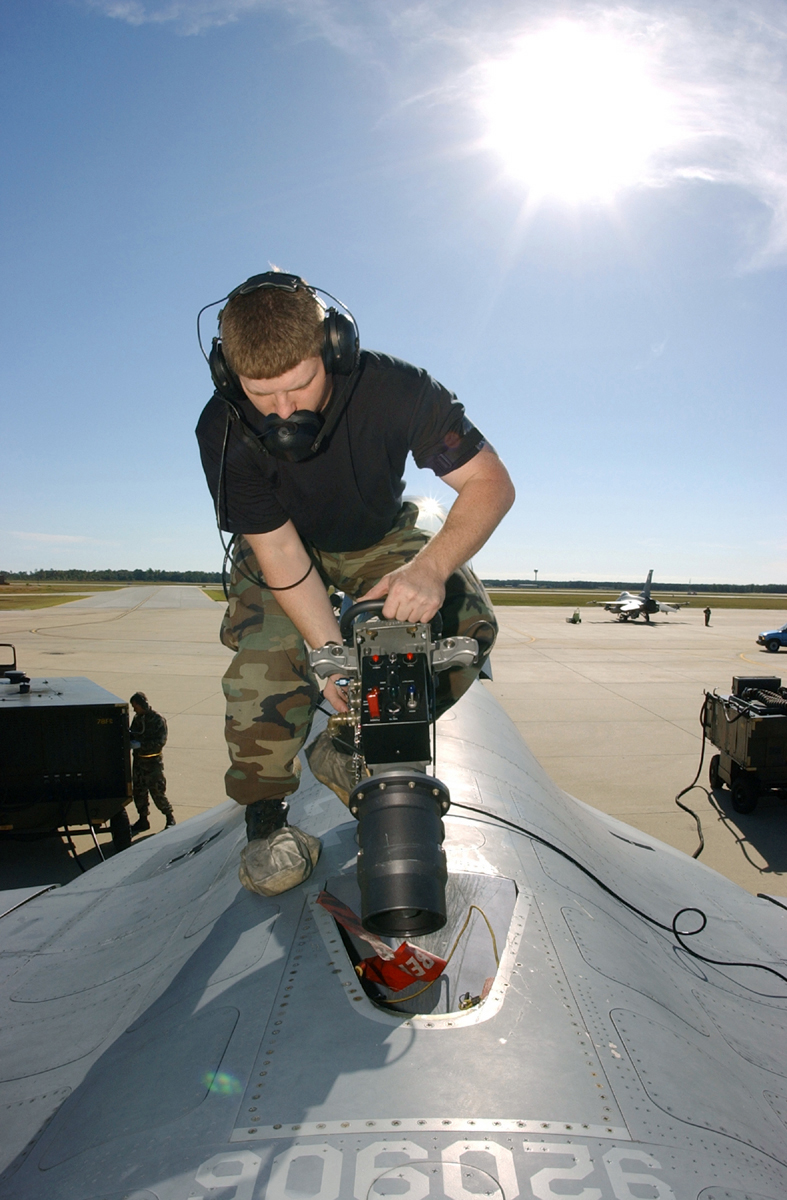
Fuel test

SHAW AIR FORCE BASE, S.C. -- Airman 1st Class Johnnie Chellberg, a fuel systems specialist with the 20th Component Repair Squadron, tests the aerial refueling receptacle of an F-16CJ Fighting Falcon. The receptacle is on the aircrafts' spine and allows the jet to air refuel to extend its mission length. Chellberg, along with many others, is preparing the base's jets for missions associated with Operational Readiness Exercise Sea Lion 02-01, held here.